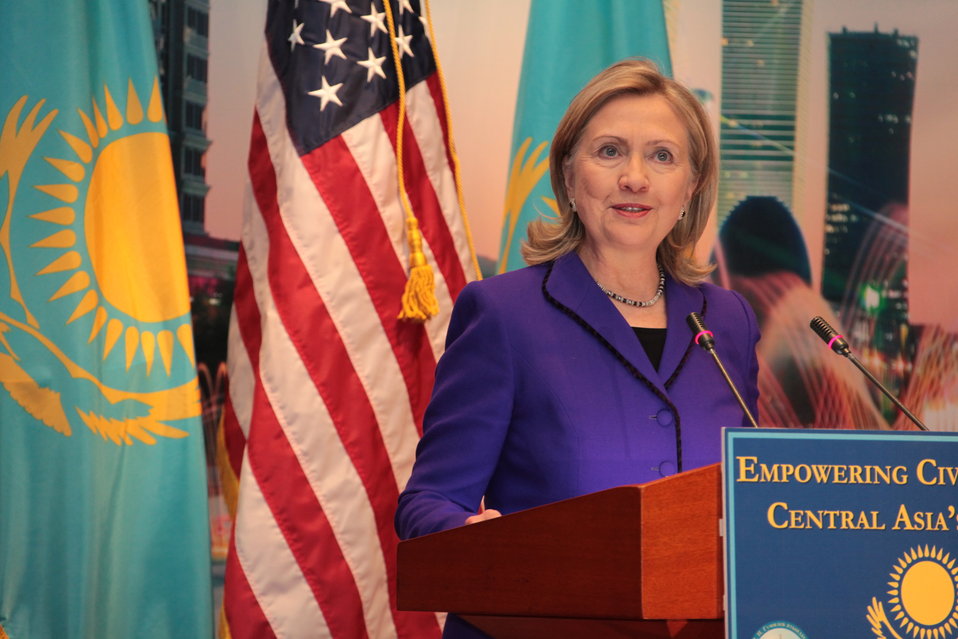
Secretary Clinton Participates in a Town Hall

U.S. Secretary of State Hillary Rodham Clinton Secretary participates in a town hall on “Empowering Civil Society for Central Asia’s Future” in Astana, Kazakhstan, on November 30, 2010.